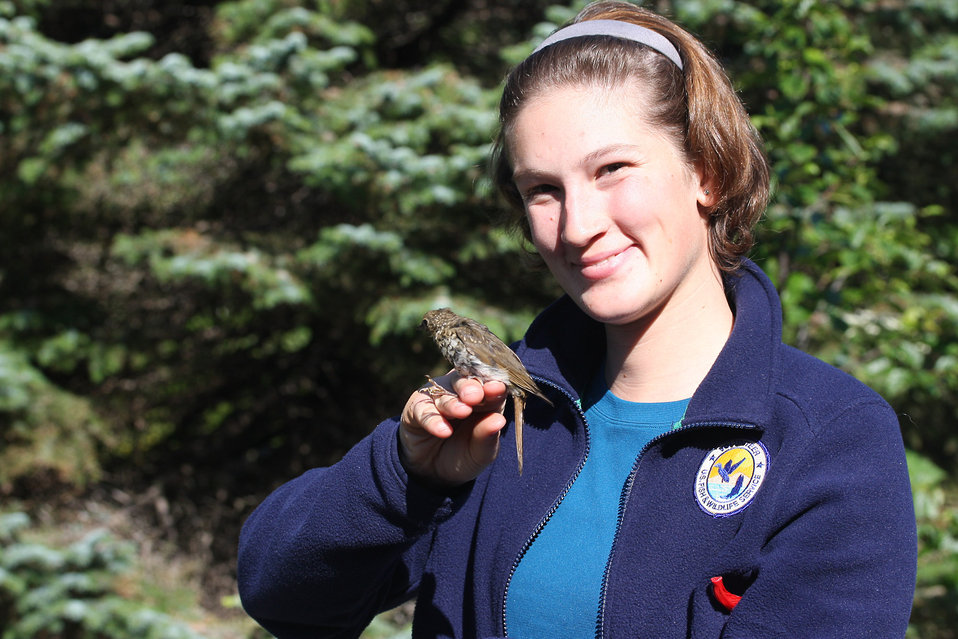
Avian volunteer Katie Studholme with a banded landbird

Photo Credit: Lisa Hupp/USFWS
Source: Kodiak NWR